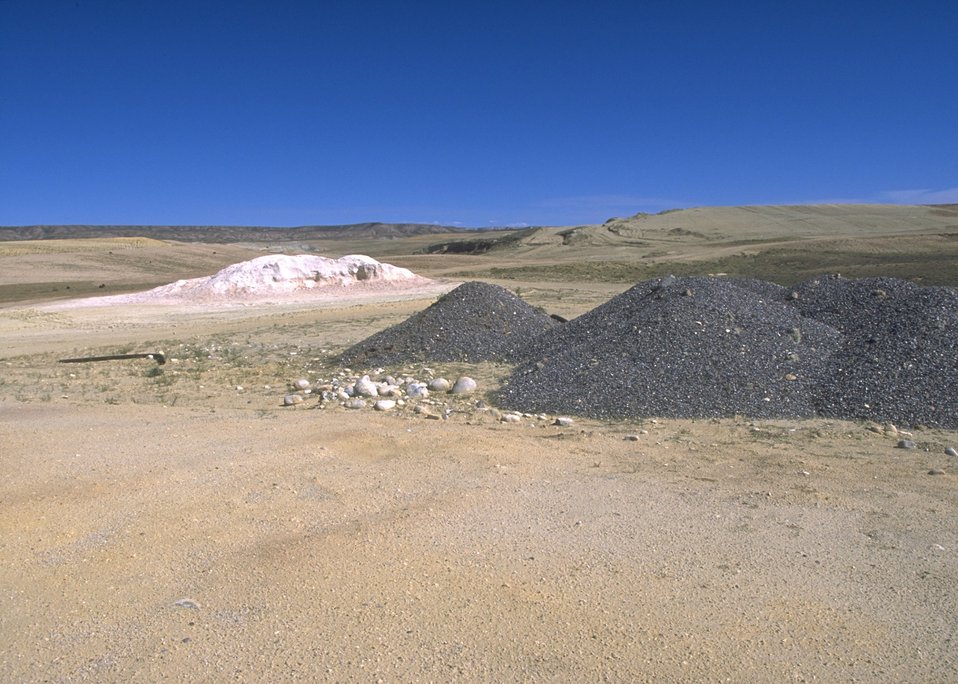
Materials used in covering abandoned mine lands at Gas Hill, Lander Field Office.